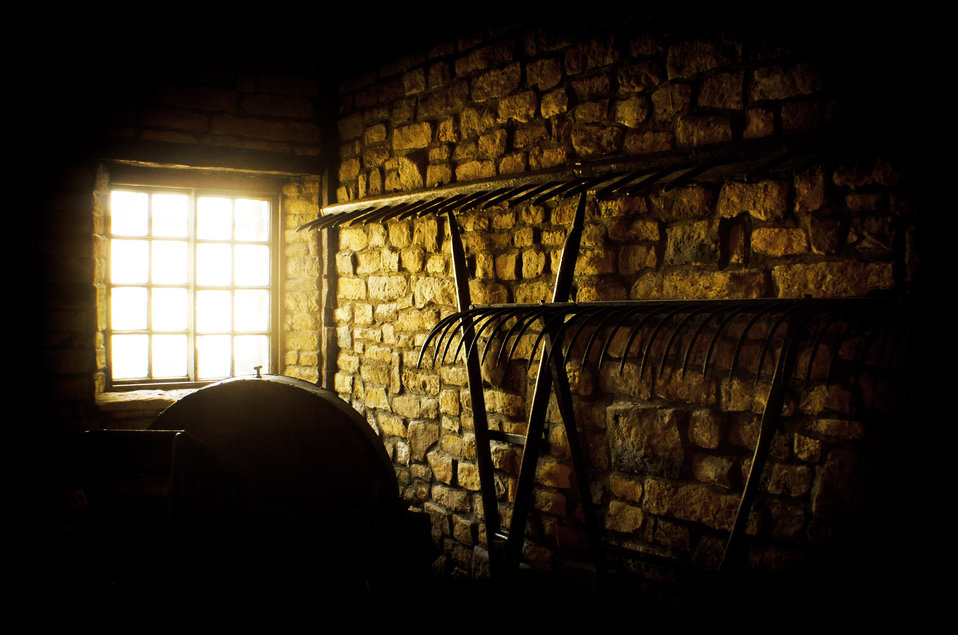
Window to the barn.